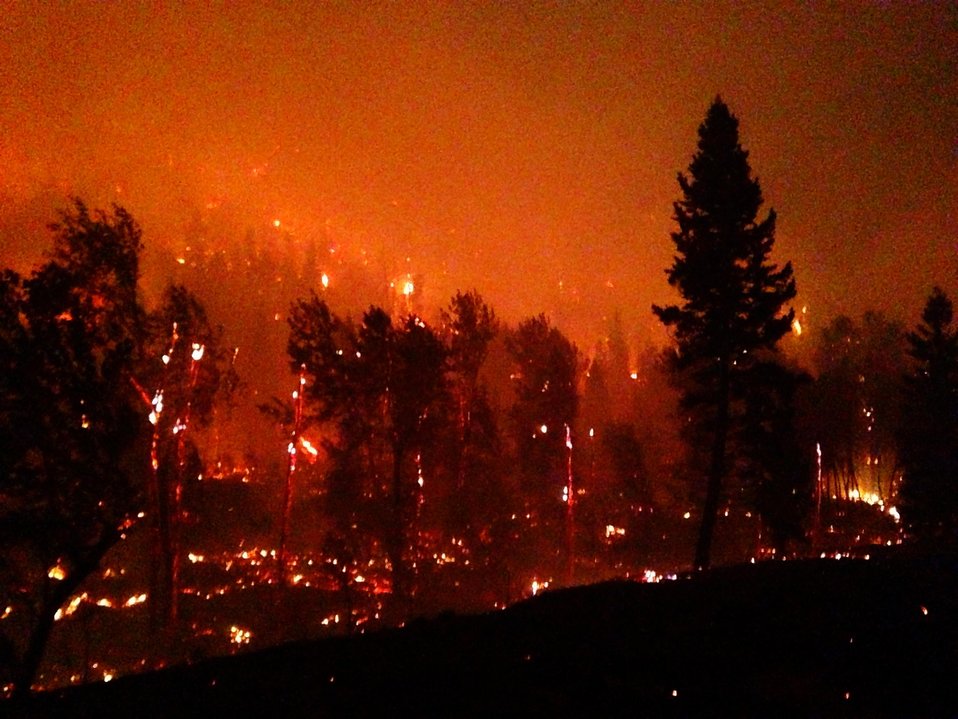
The Lodgepole Fire in the Salmon-Challis National Forest near Challis, ID began on Jul. 20, 2013 by lightning has consumed approximately 13,700 acres and is approximately 15% contained.